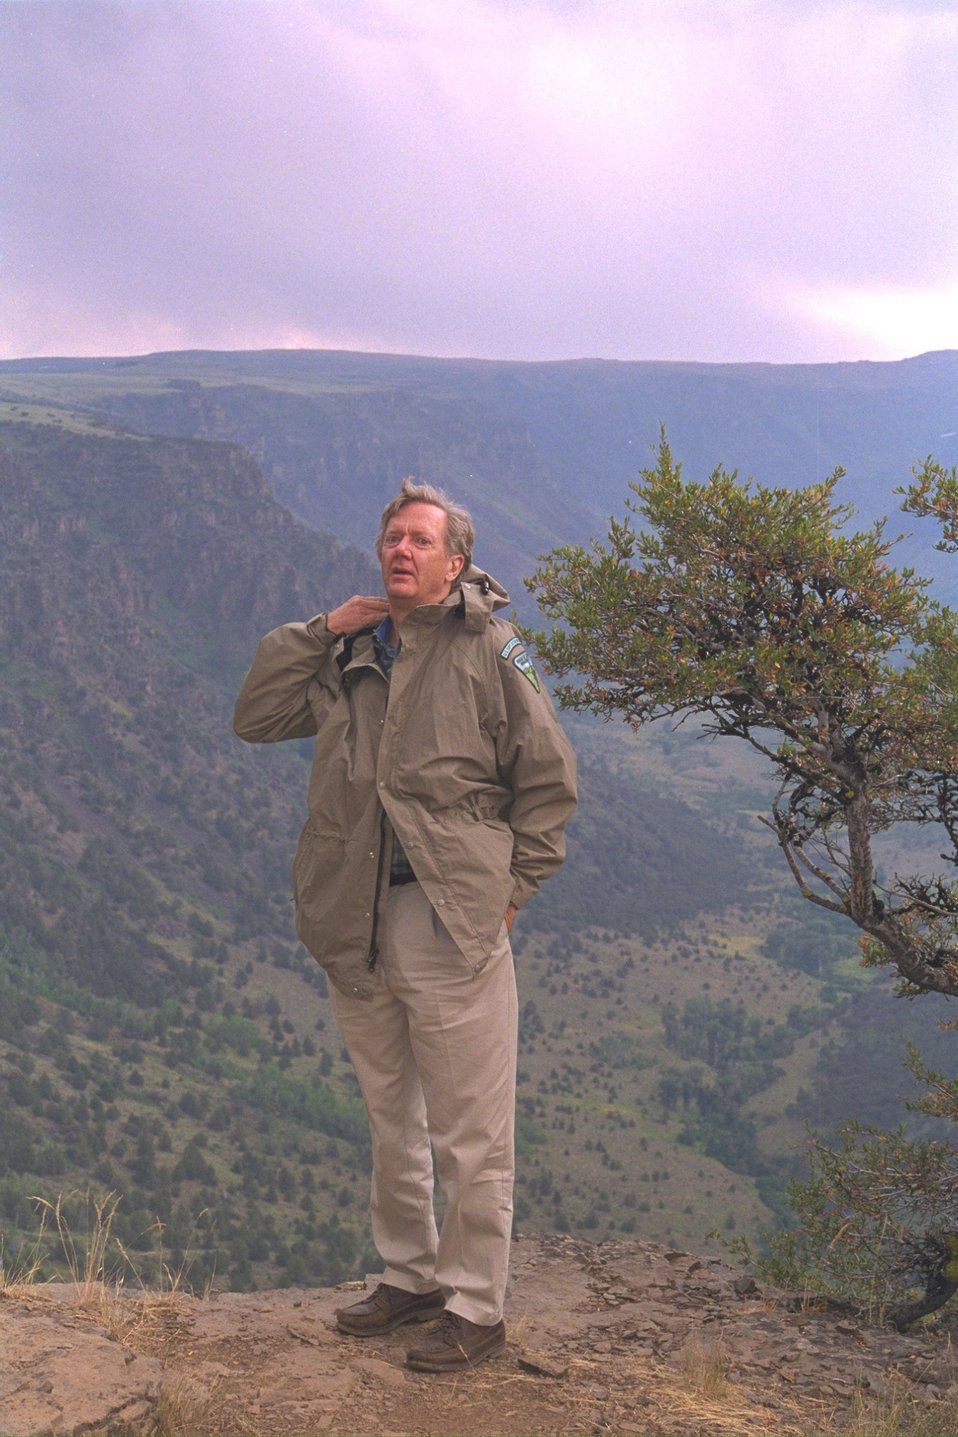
Secretary Babbitt at Big Indian Gorge overlook.